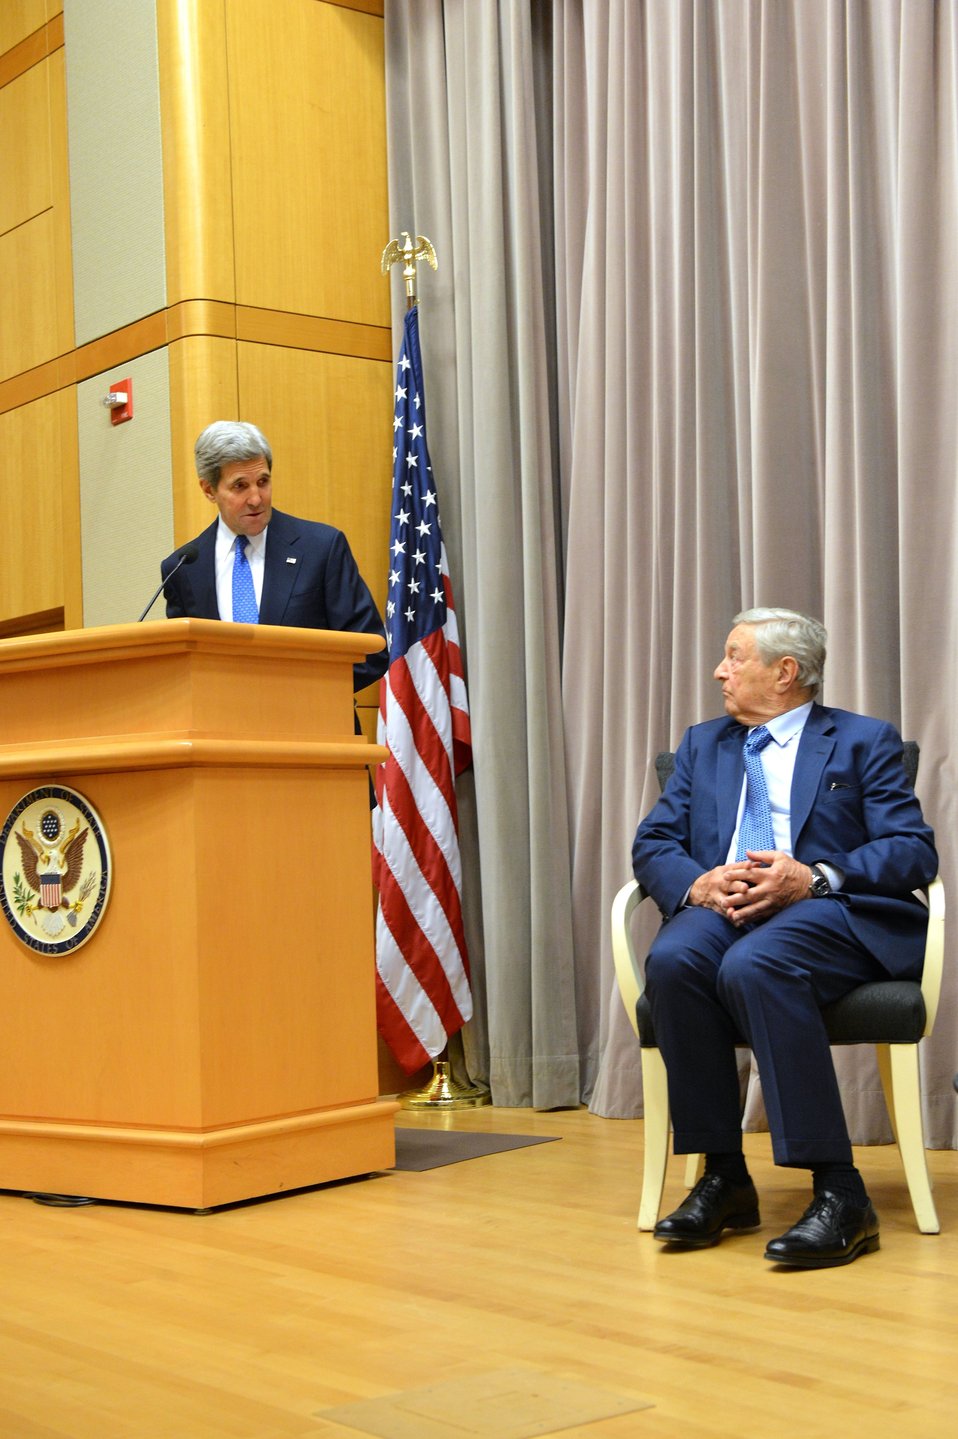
Secretary Kerry Introduces George Soros to the Open Forum

U.S. Secretary of State John Kerry introduces financier and philanthropist George Soros, who spoke with Assistant Secretary for Public Affairs Doug Frantz about strengthening civil society, democracy, and the world economy at the U.S. Department of State's Open Forum in Washington, D.C., on May 13, 2014.